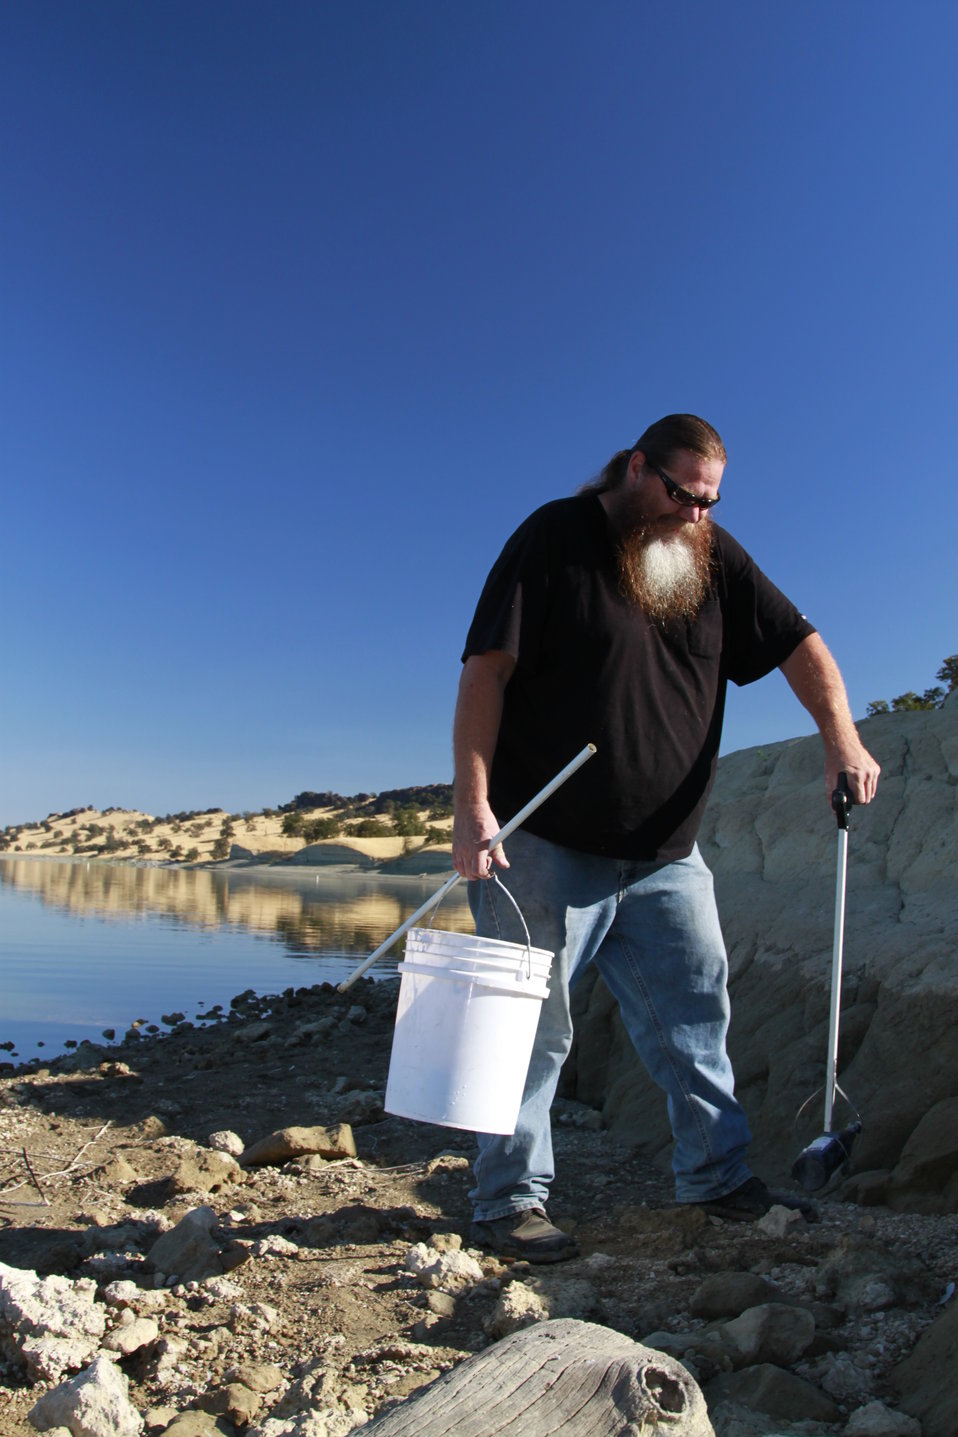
BLACK BUTTE LAKE, Calif. (Sept. 25, 2010) -- A volunteer helps clean the lakeshore during the 17th annual National Public Lands Day here Sept. 25. Park rangers from the U.S. Army Corps of Engineers Sacramento District and more than 20 volunteers celebrated the day with cleanup efforts at the park. The Corps has been involved with National Public Lands Day since its inception in 1994 and has consistently been one of the largest providers of sites and volunteers participating in the event. This year, the celebration coincides with California Coastal Cleanup Day and President Barack Obama’s America’s Great Outdoors Initiative, an effort to promote the conservation of outdoor spaces and reconnect Americans to the outdoors.